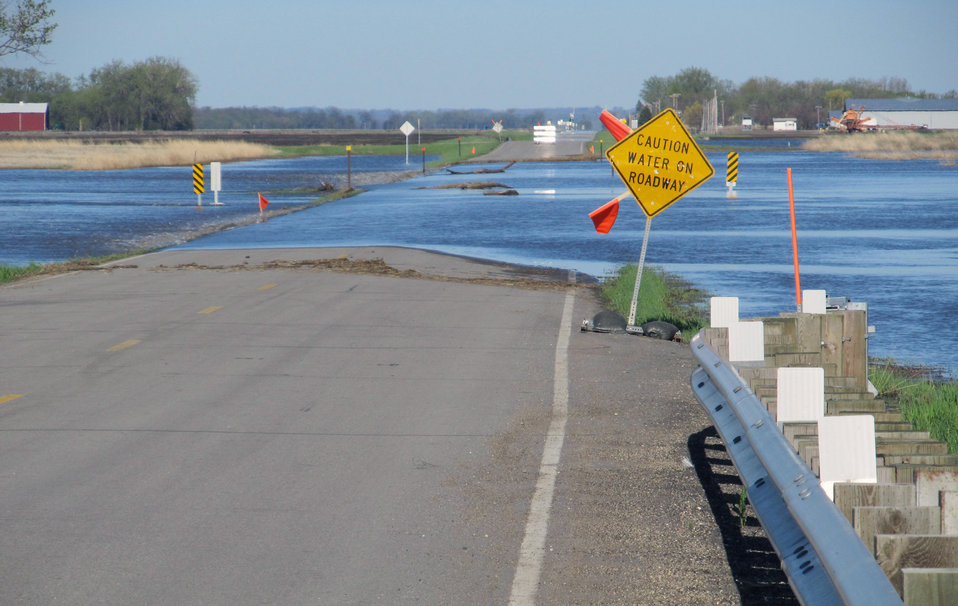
Flooding and water damage in the Park and Tongue River Watersheds located in Cavalier, Pembina and Cavalaier Counties in ND on Thursday, May 23, 2013.